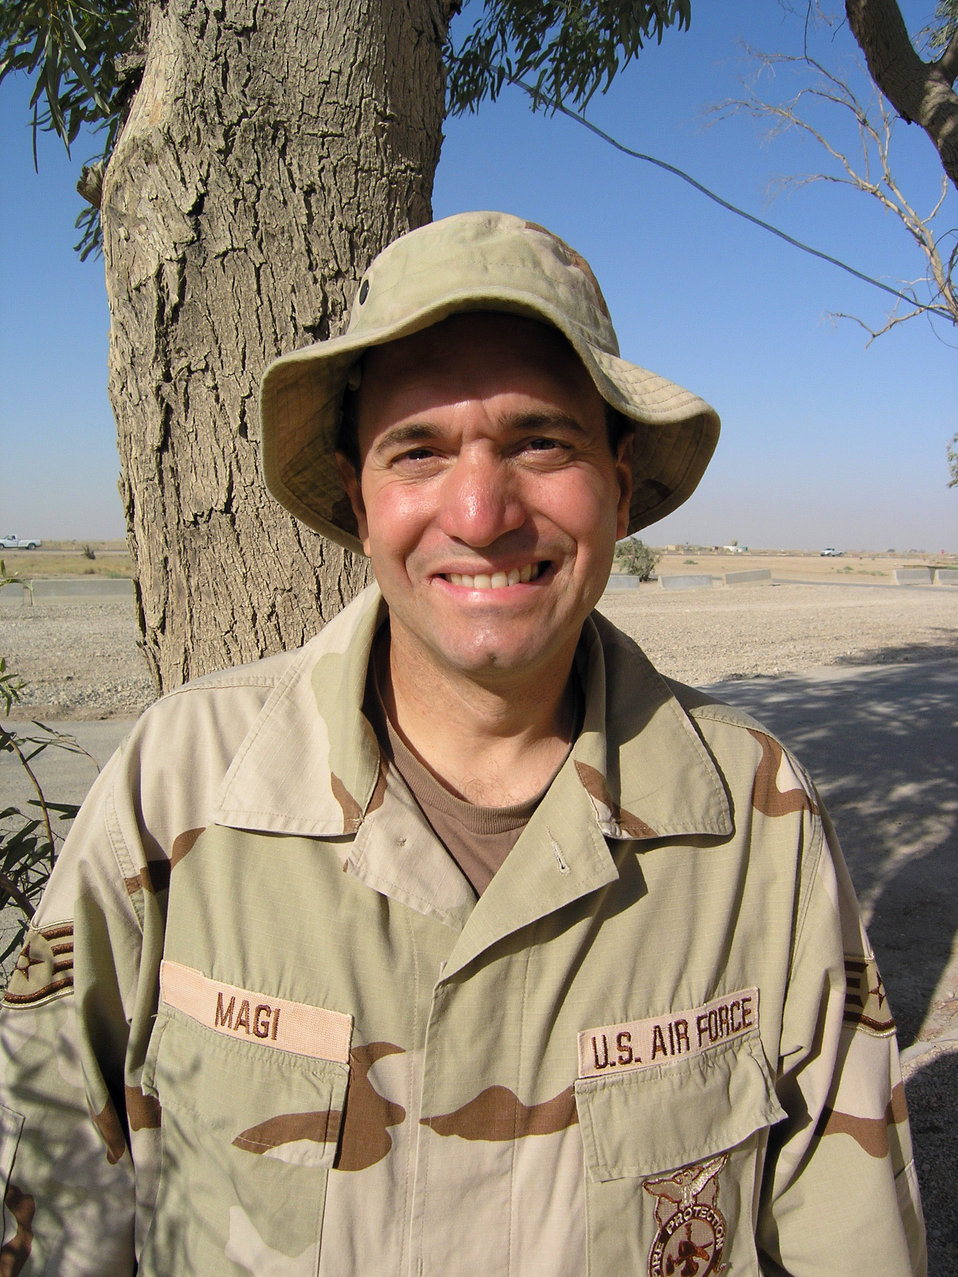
Airmen serve in Iraq to honor 9/11 victims

ALI BASE, Iraq -- Staff Sgt. Gregg Magi volunteered for a tour of duty here after he helped sift through the ashes at Ground Zero looking for survivors four years ago. The firefighter with the 407th Expeditionary Civil Engineer Squadron is deployed from Stewart Air National Guard Base, N.Y.